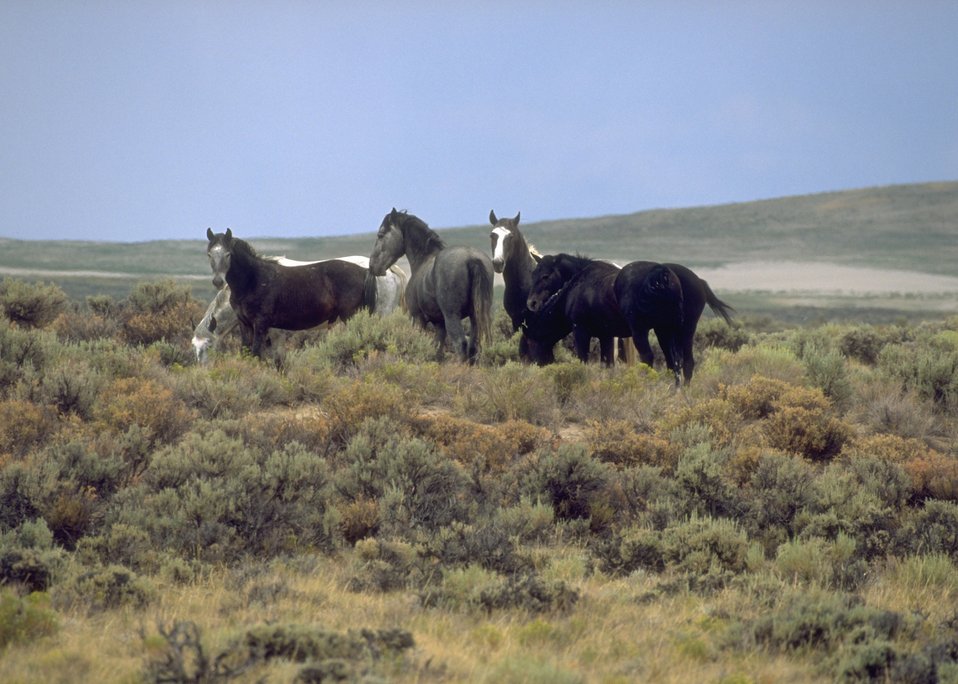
Wild horses, Rock Springs Field Office.